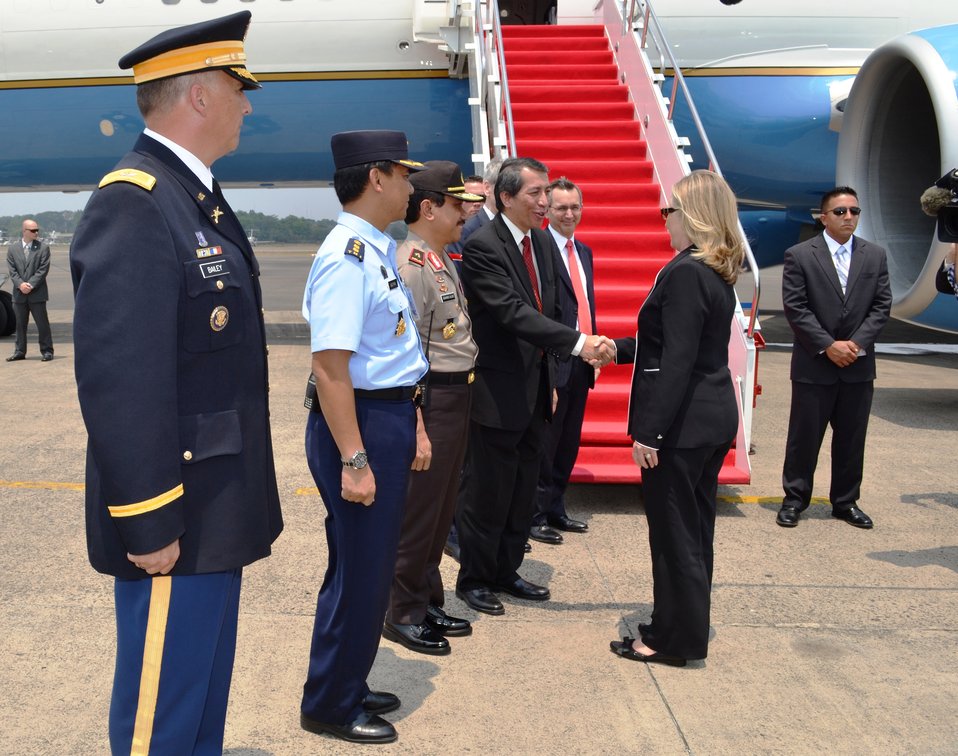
Secretary Clinton Bids Farewell

U.S. Secretary of State Hillary Rodham Clinton bids farewell to Jakarta, Indonesia, September 4, 2012.